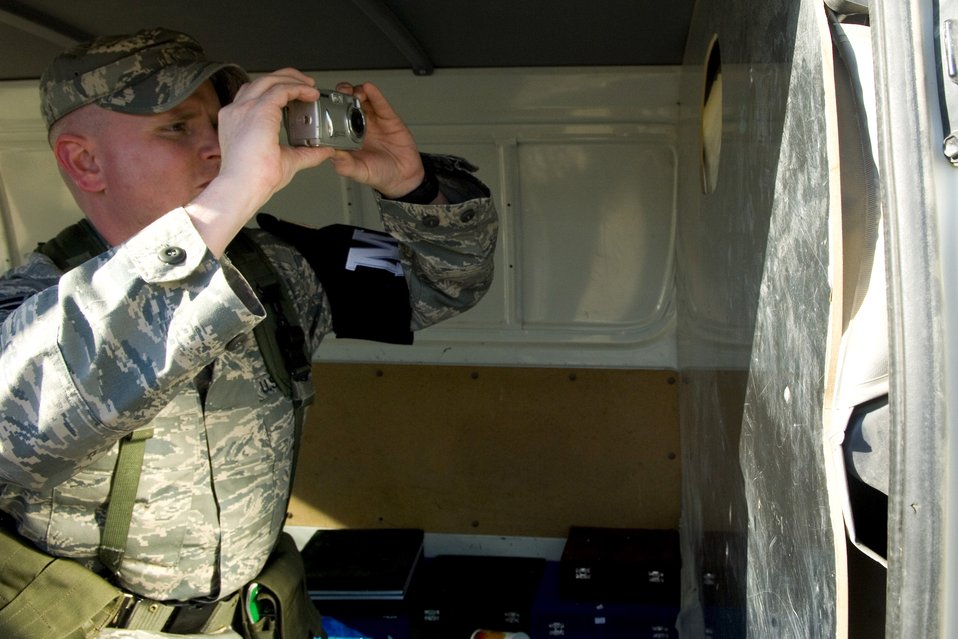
Balad Airmen keep order, maintain security

Staff Sgt. Jeremy West takes a photograph of evidence after responding to a property damage call Dec. 27 at Balad Air Base, Iraq. The photos will become part of the official report documenting the incident. Sergeant West is a 332nd Expeditionary Security Forces Squadron Det. 1 Provost Marshal Office patrolman and deployed from McConnell Air Force Base, Kan.